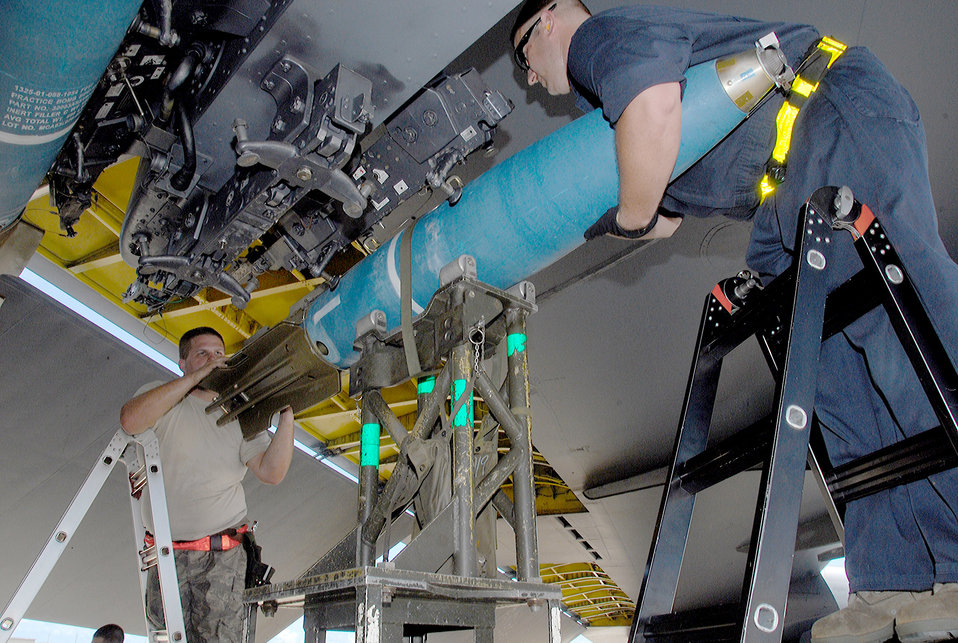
Valiant Shield joint exercise

Staff Sgts. Dustin Hyden and Doyle Atkinson upload Mk 62 Quickstrike naval mines onto a B-52 Stratofortress during Exercise Valiant Shield Sept. 14, 2010, at Andersen Air Force Base, Guam. The joint exercise focuses on integrated joint training and interoperability among U.S. military forces. The Airmen are assigned to the 36th Expeditionary Maintenance Squadron.